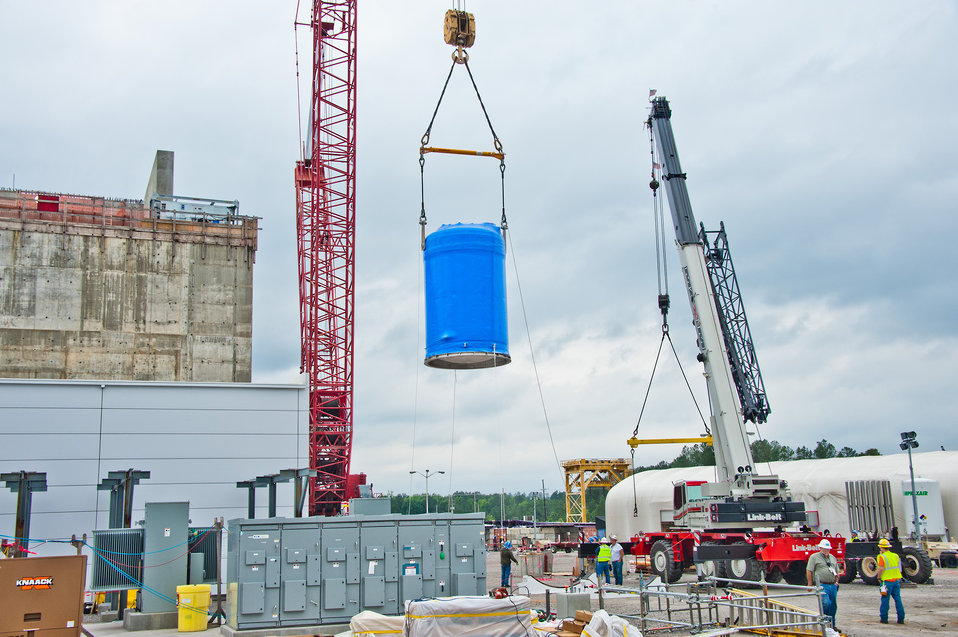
SRS Processing Tanks

A major construction milestone is met with the successful installation of six of 10 planned large processing tanks at the Savannah River Site’s (SRS) Salt Waste Processing Facility (SWPF). Installation of these critical facility components advances SWPF construction, allowing for piping and facility floors to be completed and the facility roof put into place. Slated for operation in late 2015, SWPF is designed to treat 33 million gallons of salt waste currently stored in underground tanks at SRS.